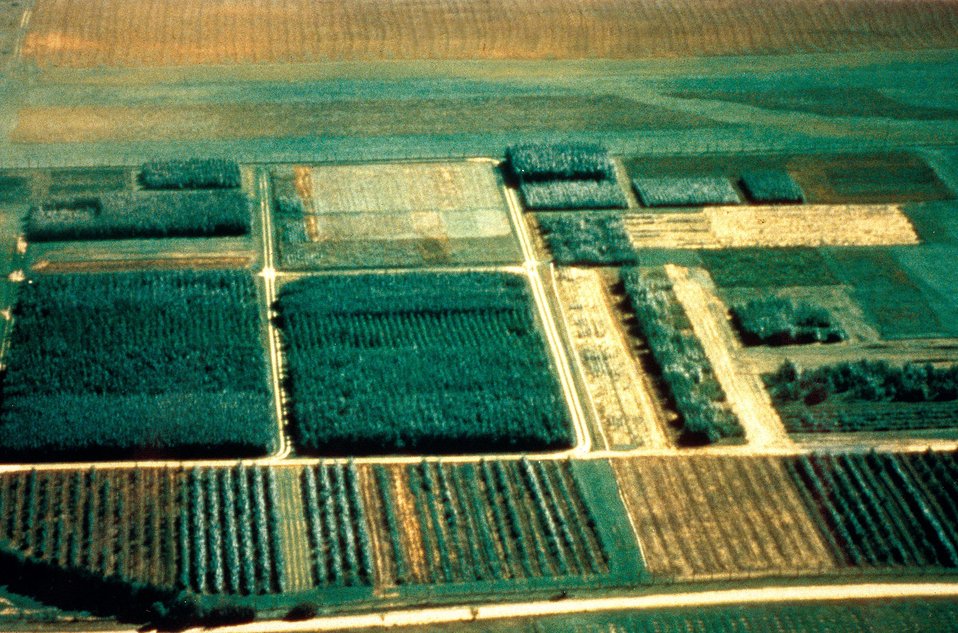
AERIAL VIEW OF SHORT ROTATION TEST PLOTS OF HYBRID POPLAR TREES.
TESTING AREAS AT OAK RIDGE NATIONAL LABORATORY PROVIDE RESEARCHERS WITH INFORMATION ON THE EFFECTS OF CULTURING PRACTICES SUCH AS WEED CONTROL, LEVELS OF FERTILIZATION, IMPACTS OF TREE SPACINGS, NUTRIENT LOSSES, AND ENVIRONMENTAL FACTORS.